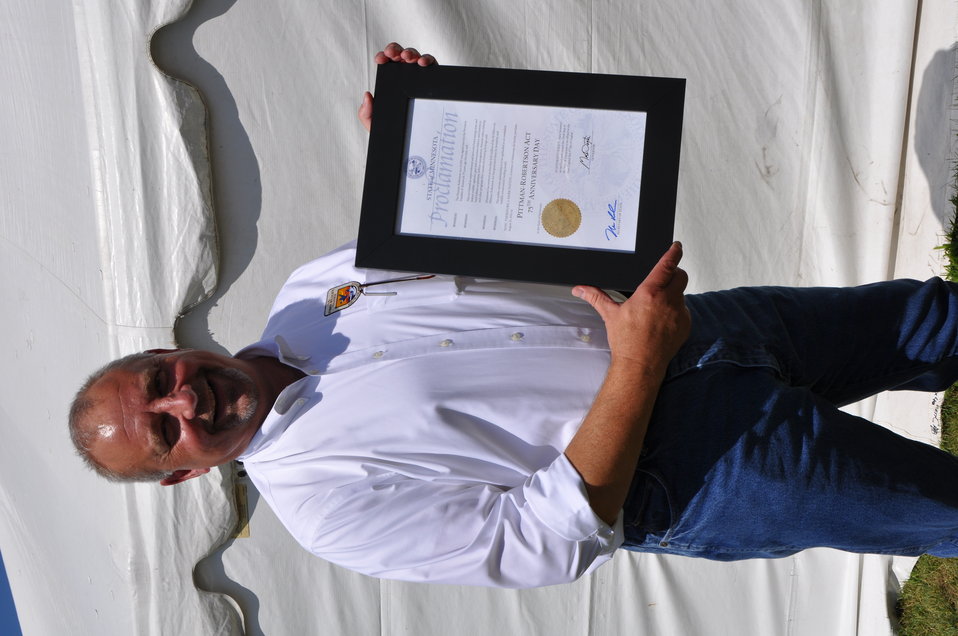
WSFR Chief Jim Hodgson Holding Governor Dayton's Procamation.

Wildlife and Sport Fish Restoration Program Chief Jim Hodgson holding Governor's Dayton's Proclamation of Pittman-Robertson Act 75th Anniversary Day.